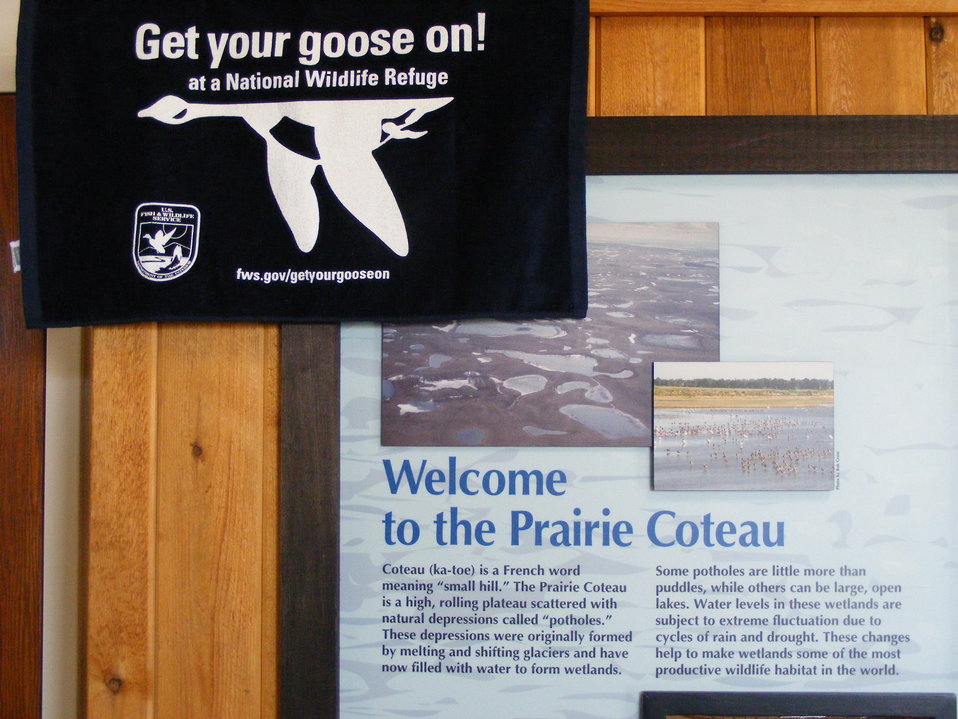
Get Your Goose On!